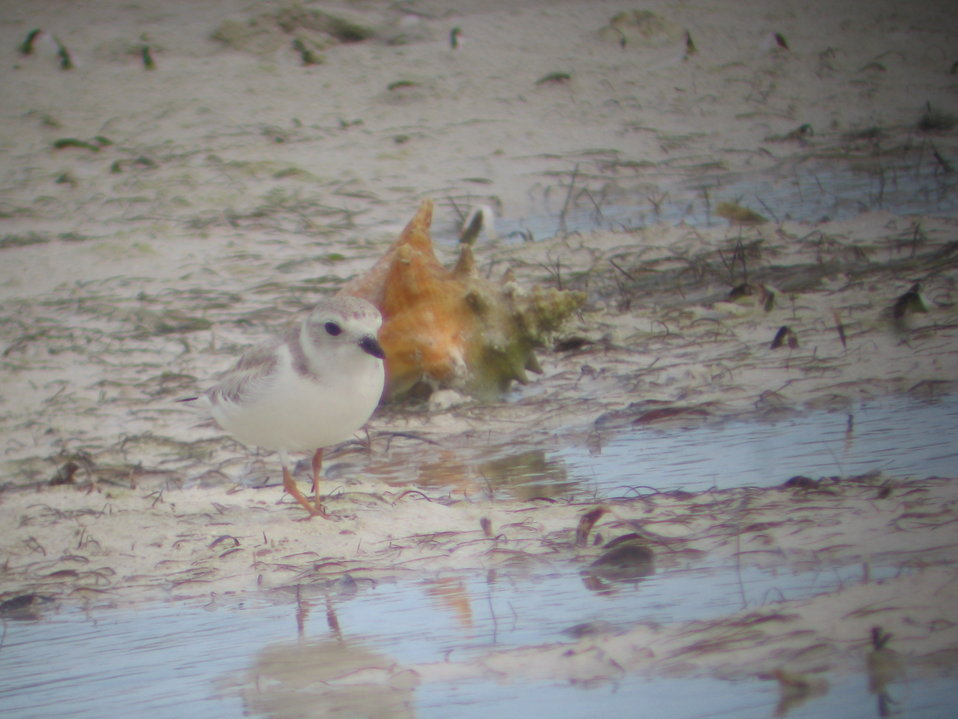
Piping plover in front of conch shell

Photo taken at Berry Islands.